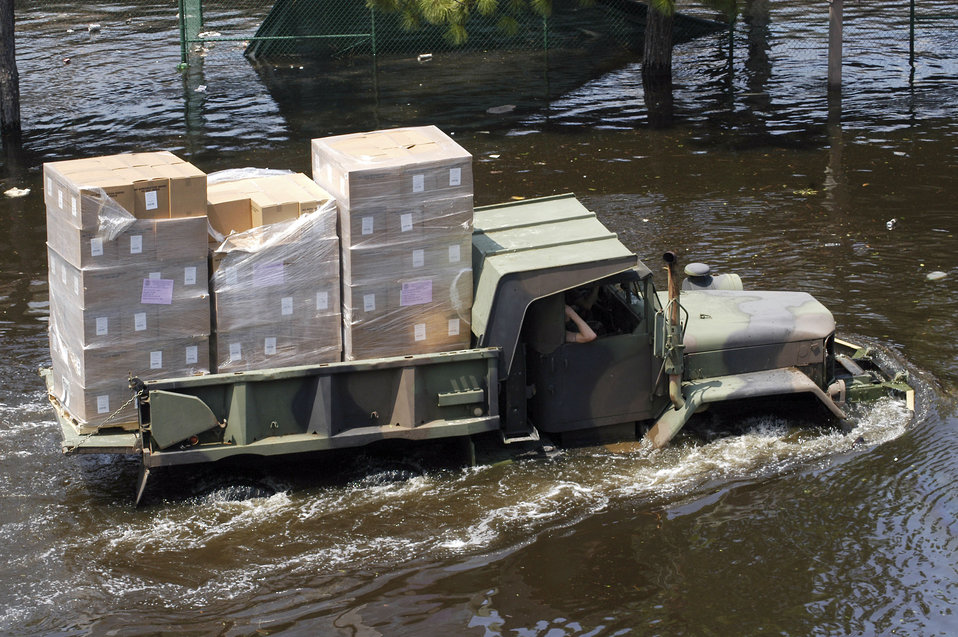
Deep water

NEW ORLEANS, La. -- National Guard multipurpose utility truck brings supplies to the Super Dome Aug 31. Tens of thousands of displaced citizens sought shelter at the dome, before, during and after Hurricane Katrina.